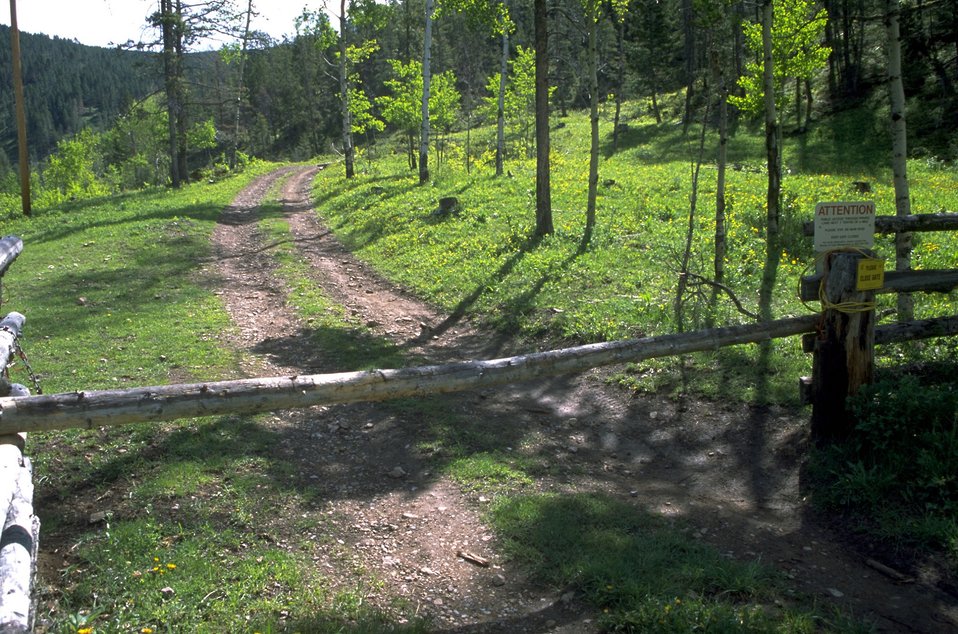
Pole gate and road into LimeKiln Canyon